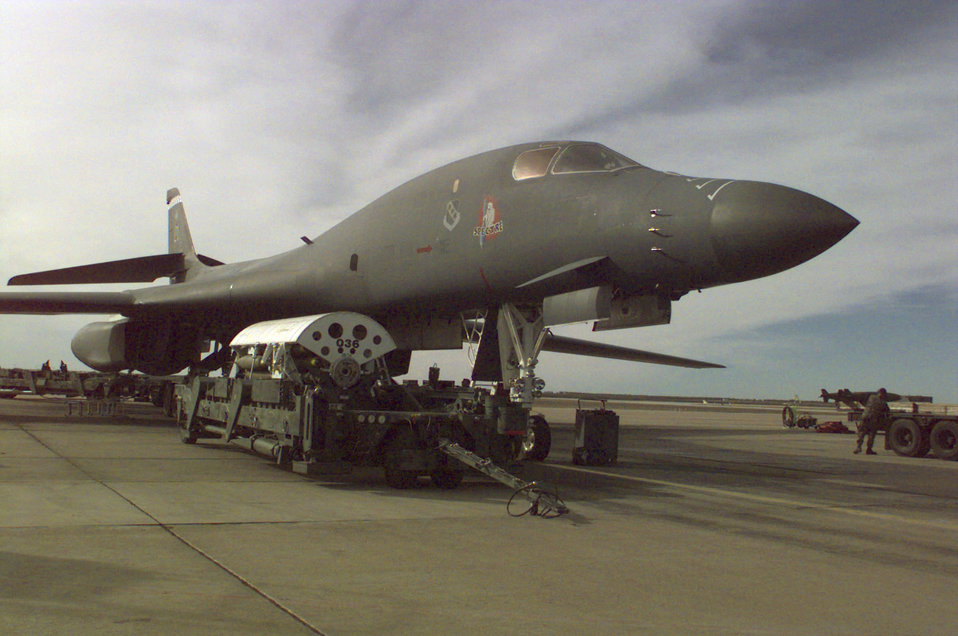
Waiting for action

OPERATION DESERT FOX -- A 28th Bomb Squadron B-1B Lancer from Ellsworth Air Force Base, S.D., awaits as numerous MK-82 bombs are loaded and the aircraft is prepared for immediate deployment to the Gulf region in support of Operation Desert Fox, Dec. 17, 1998.